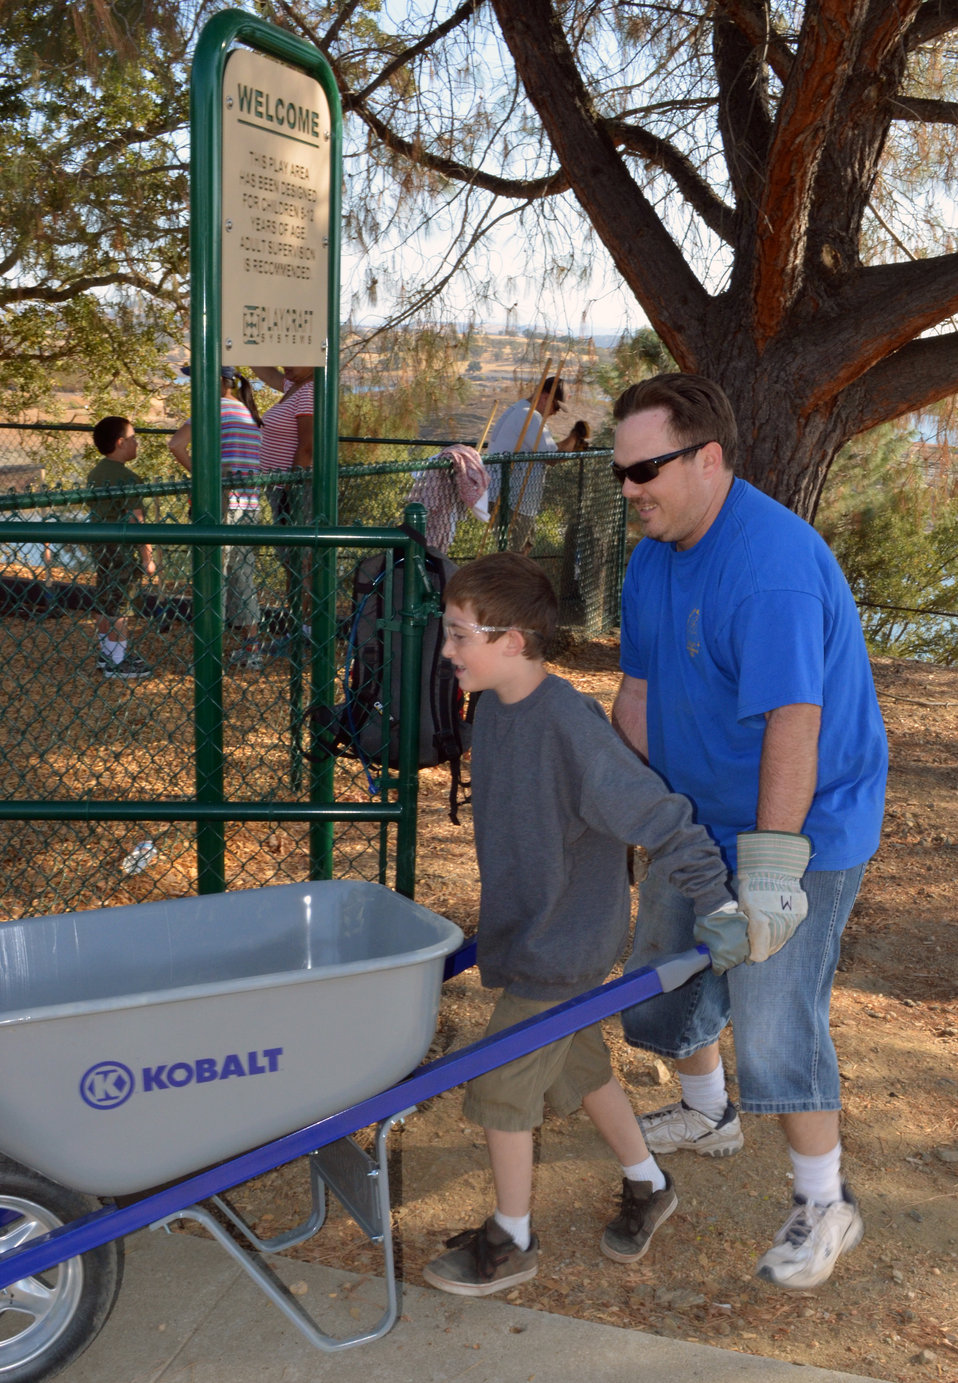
Double drivers (National Public Lands Day 2012)

Scouts and their leaders from Scout Group 423, Manteca, Calif., work at New Hogan Lake during National Public Lands Day, Sept. 29, 2012. U.S. Army Corps of Engineers park staff and an army of volunteers celebrated the day with park improvement projects, camaraderie and food.